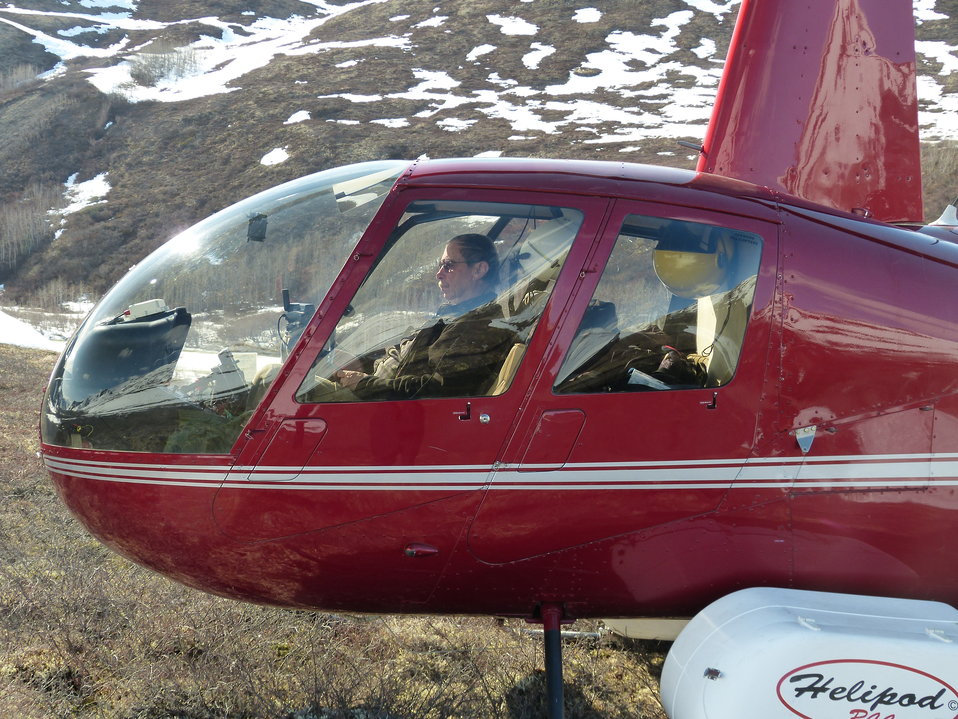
Kilbucks 5-15-2013 KSowl (167)

Cliff-nesting raptor survey, Kilbuck Mountains, Yukon Delta National Wildlife Refuge

Photo credit: Kristine Sowl,
USFWS, YDNWR